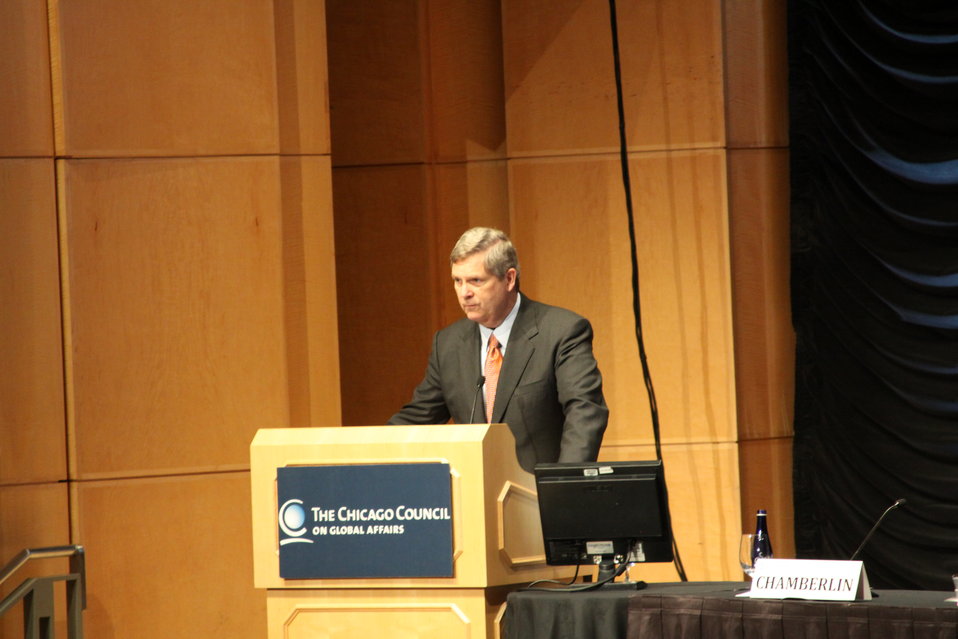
Secretary Vilsack Delivers Remarks

U.S. Secretary of Agriculture Tom Vilsack delivers remarks on USDA's role in Feed the Future, the U.S. government's global hunger and food security initiative, at the Chicago Council on Global Affairs' Symposium on Global Agriculture and Food Security in Washington, D.C., on May 24, 2011.